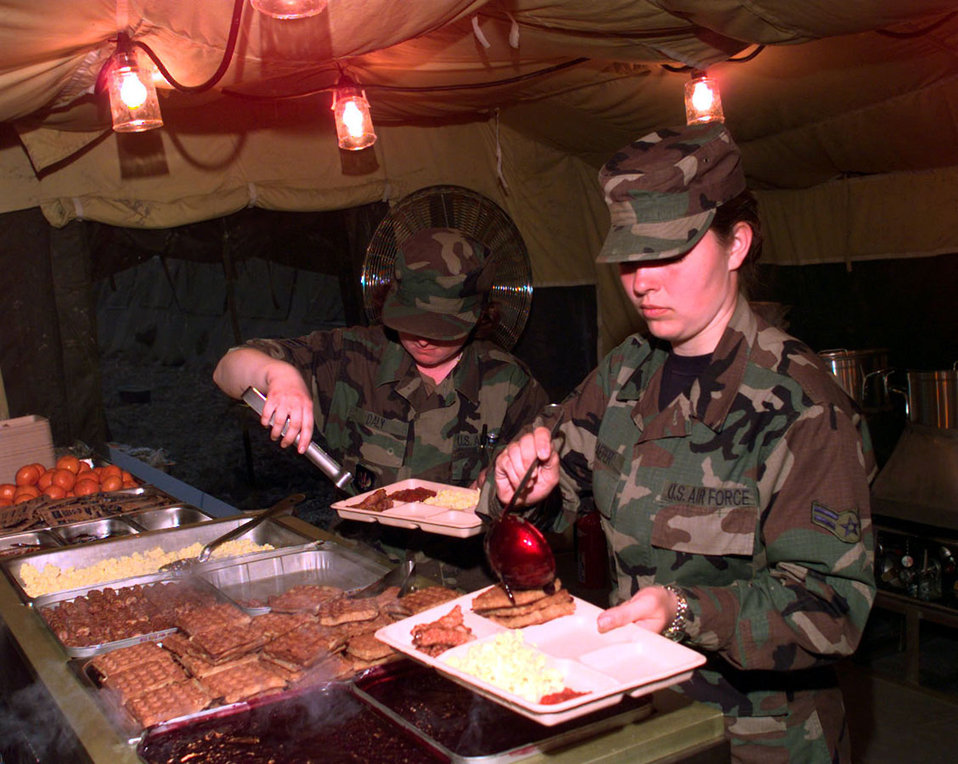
Hot chow

TIRANA, Albania -- Airman 1st Class Heather Schaefer (right) of Granite City, Ill., and Airman 1st Class Angel L. Daly of Concord, Calif., both members of the 86th Services Squadron, Ramstein Air Base, Germany, serve the first hot breakfast to U.S. troops deployed here April 20, 1999. The airmen are deployed supporting Operation Sustain Hope.